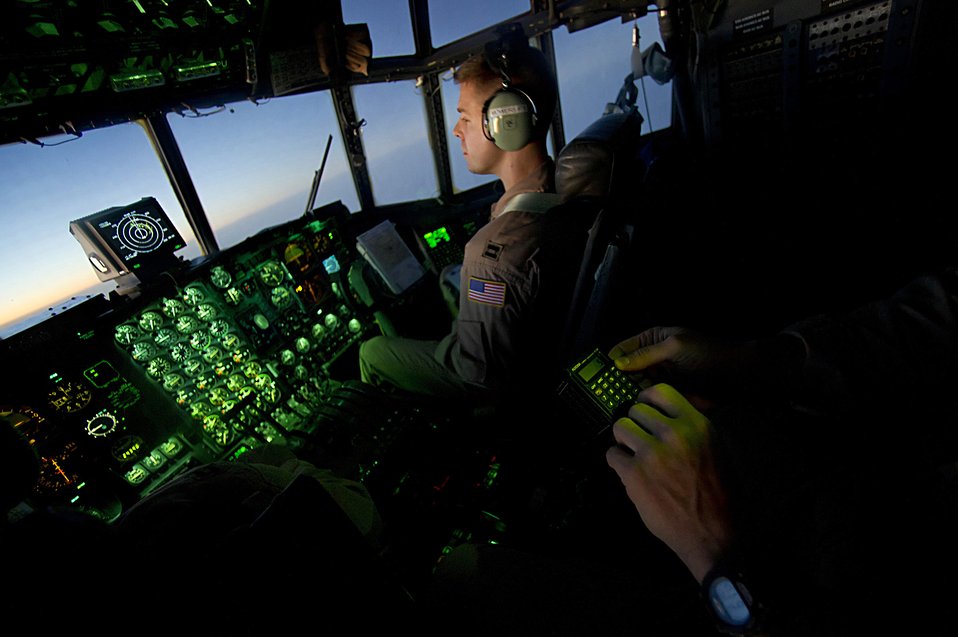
Working in the shadows

Senior Master Sgt. Christopher Janik, a C-130 Hercules flight engineer, calculates fuel levels for Capt. Ryan Mowers March 3, 2011, as they transport Soldiers from the 4th Infantry Division on the first leg of their trip home following their deployment to Iraq. The aircrew is from the Air Force Reserve Command's 914th Airlift Wing at Niagara Falls Air Reserve Station, N.Y.